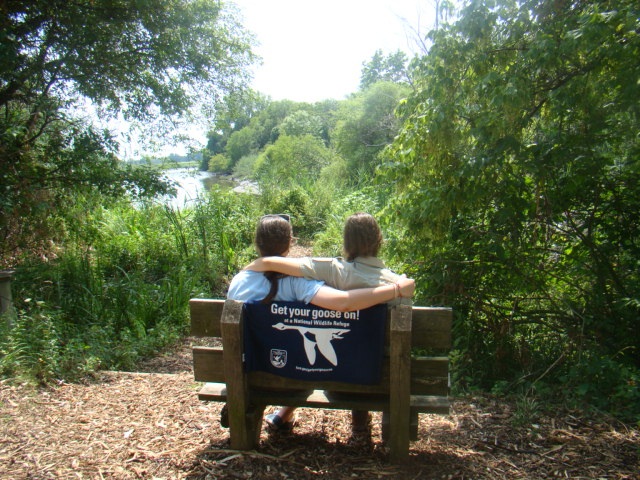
Get Your Goose On!

Looking out into the marsh. GYGO! at John Heinz National Wildlife Refuge.